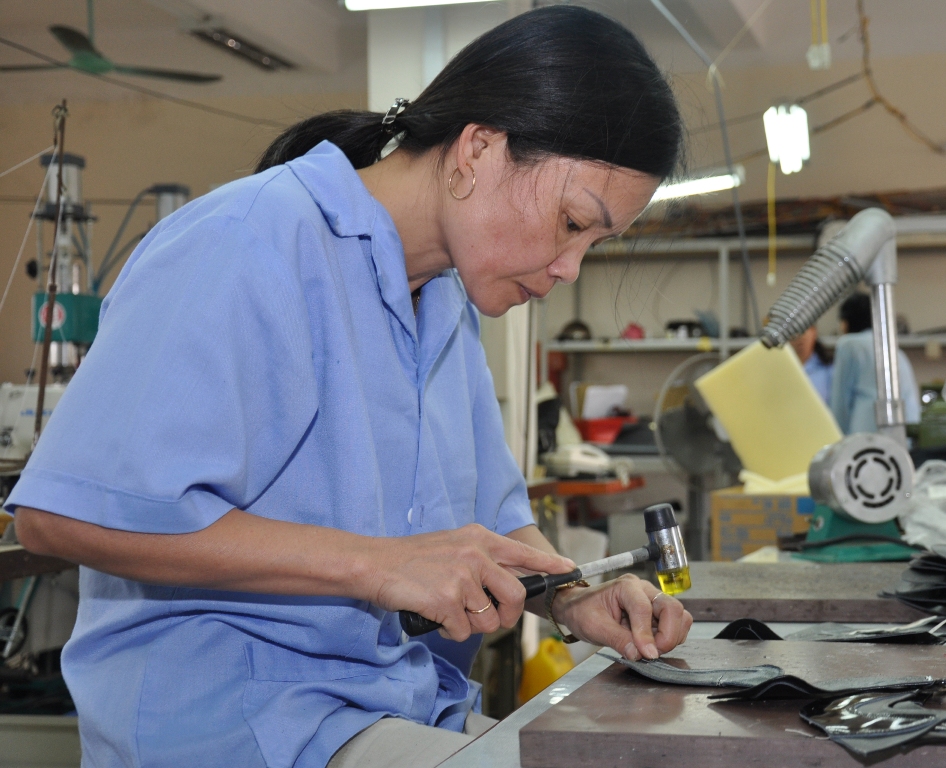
USAID supports economic growth activities in Vietnam.